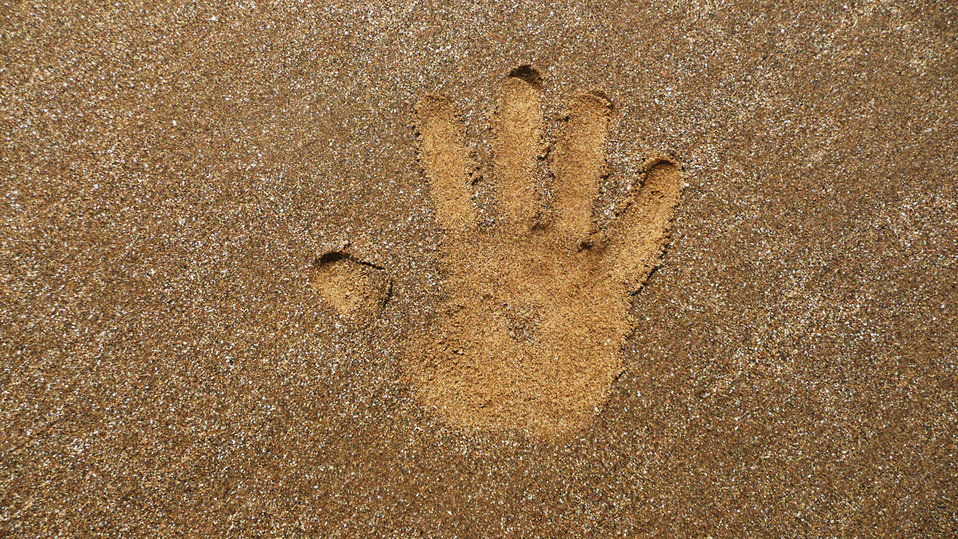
Hand print in the sand.